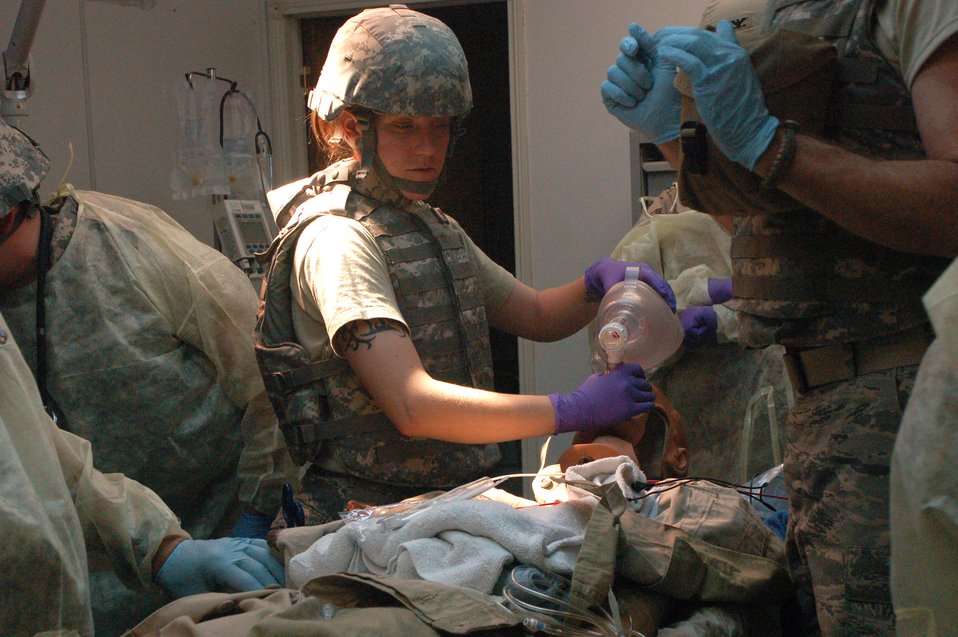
Sather medics prepare for worst

Staff Sgt. Jalayne Powers monitors a simulated patient during a recent training exercise for members of the 447th Expeditionary Medical Squadron. Sergeant Powers is a bioenvironmental technician.